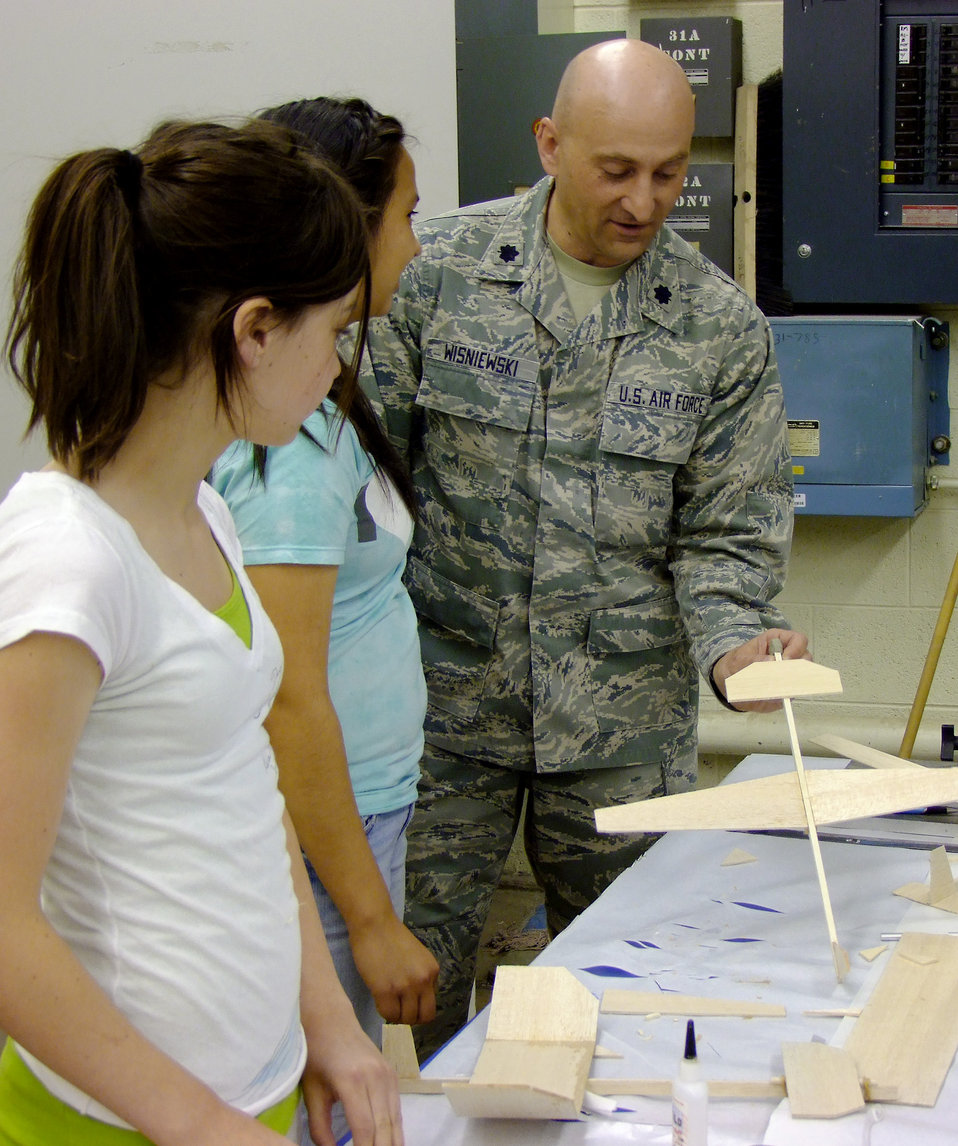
Teens soar at 11th-annual aviation camp

Lt. Col. Charles Wisniewski works with two teens on model gliders June 7, 2011, at the Air Force Academy, Colo.